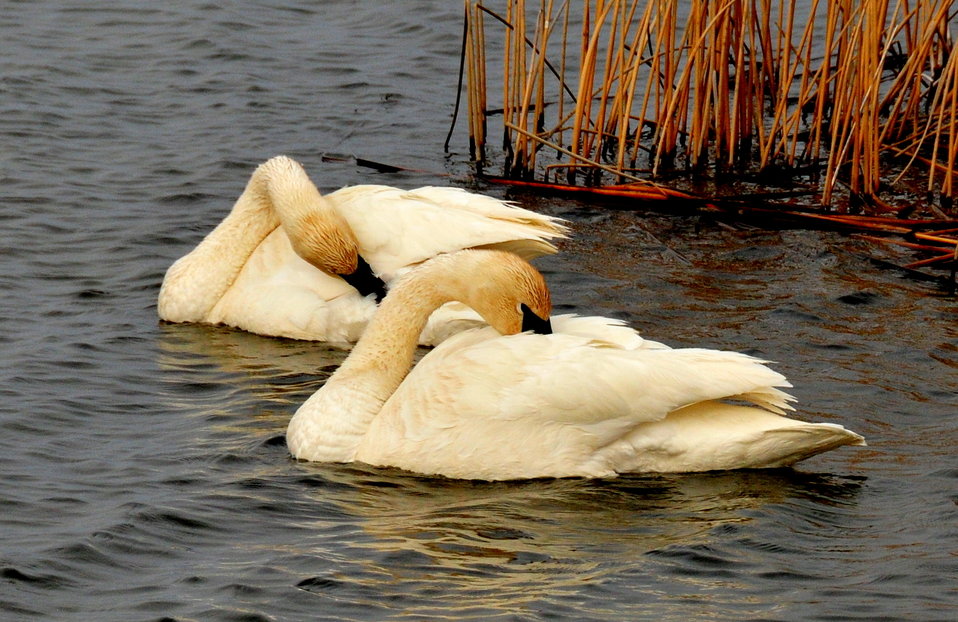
Preening trumpeter swans on Seedskadee NWR 01

A pair of trumpeter swans preening their feathers on Seedskadee NWR in Wyoming. The rust colored staining on the head feathers is caused by contact with hydric soils while feeding. Trumpeter swans spend a large portion of their day tipping up and using their long necks to reach the submerged vegetation and tubers in the soil. This requires swans to spend up to 12% of daylight hours preening to maintain their flight feathers.